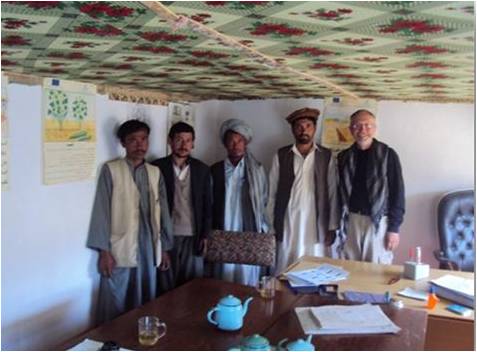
Training Session on Wheat